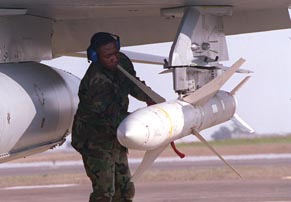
AGM-88 HARM

FILE PHOTO -- A weapons loader checks the AGM-88 HARM missile on an F-16C Fighting Falcon. The HARM (high-speed anti-radiation missile) is an air-to-surface tactical missile designed to seek and destroy enemy radar-equipped air defense systems.